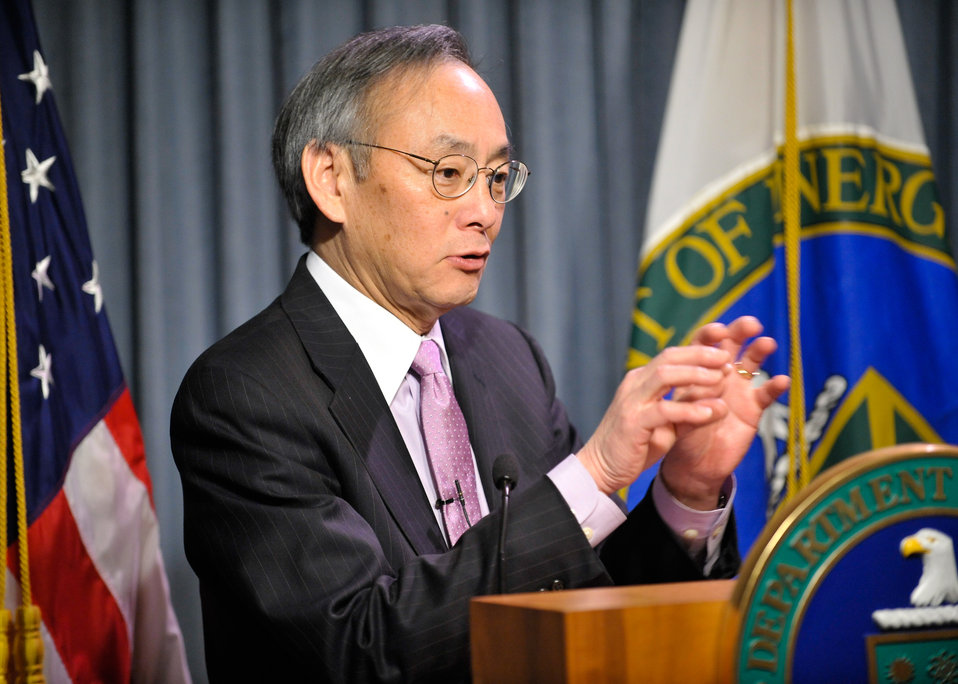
Energy Matters Online Townhall 3 of 5

Secretary Steven Chu hosts an online town hall to discuss President Obama's clean energy and innovation agenda.